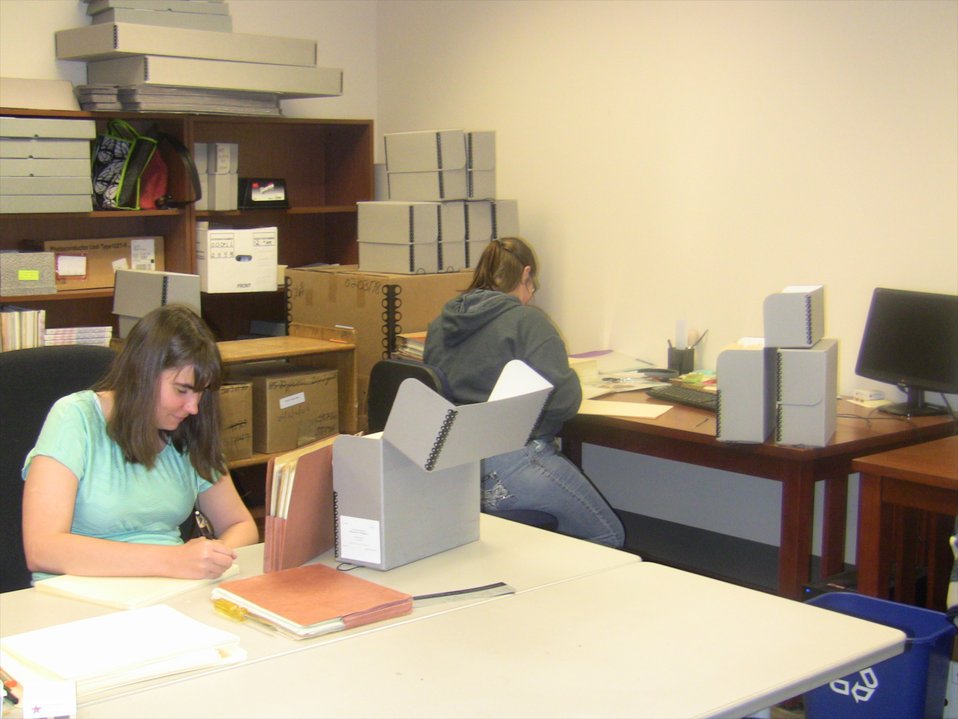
Denise Ruminski and Jennifer Bonde performing holding maintaince; Location: National Archives at Denver, Broomfield, CO